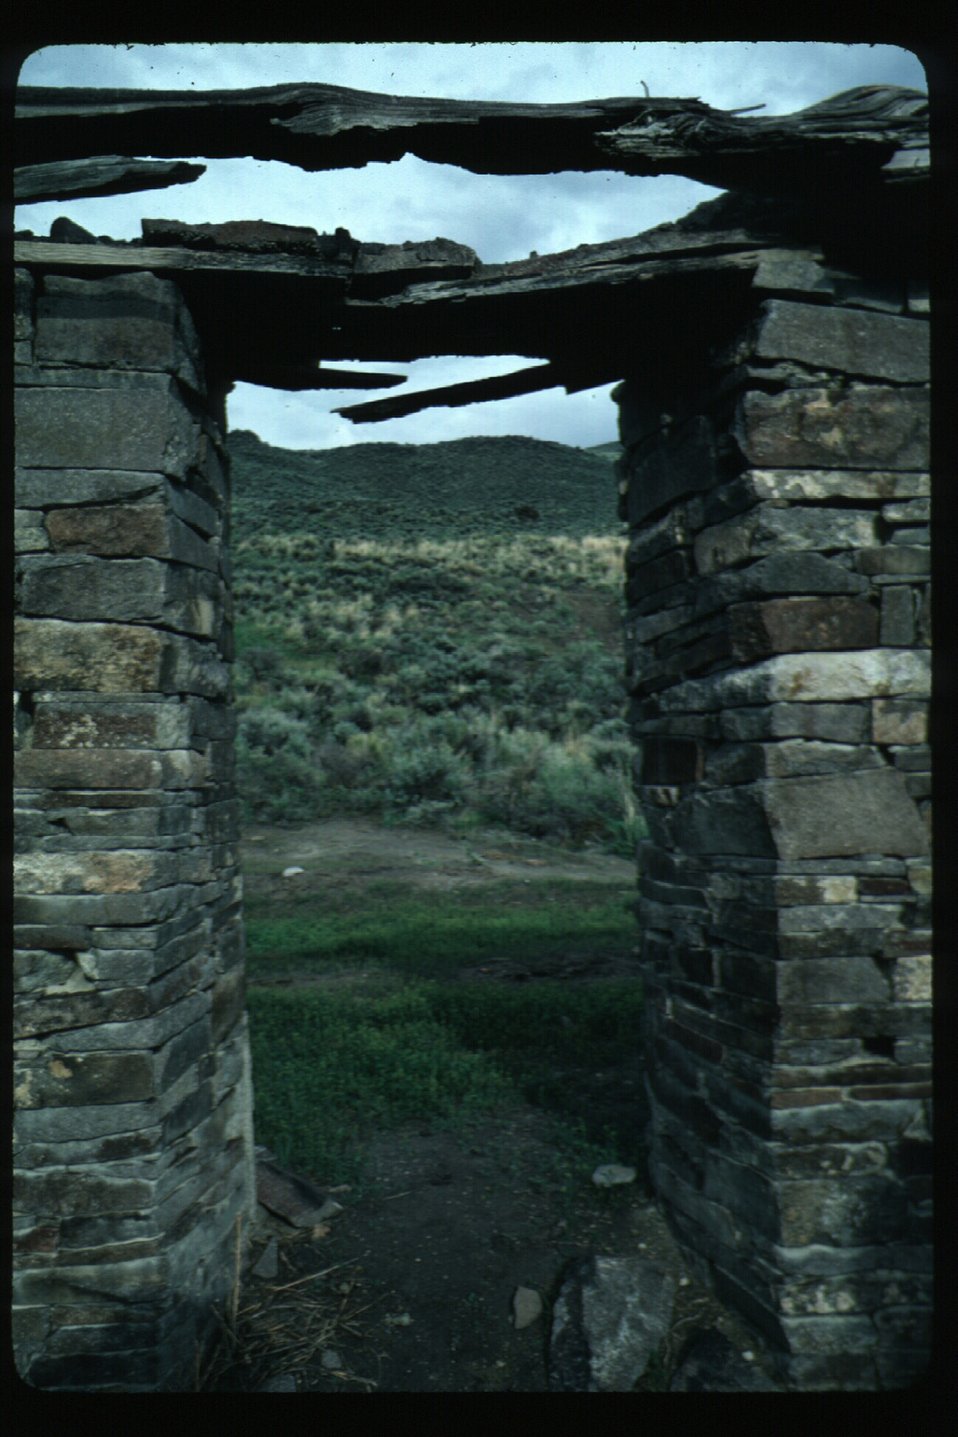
South Fork Owyhee Coyote Hole Archeology LSRD Lower Snake River District